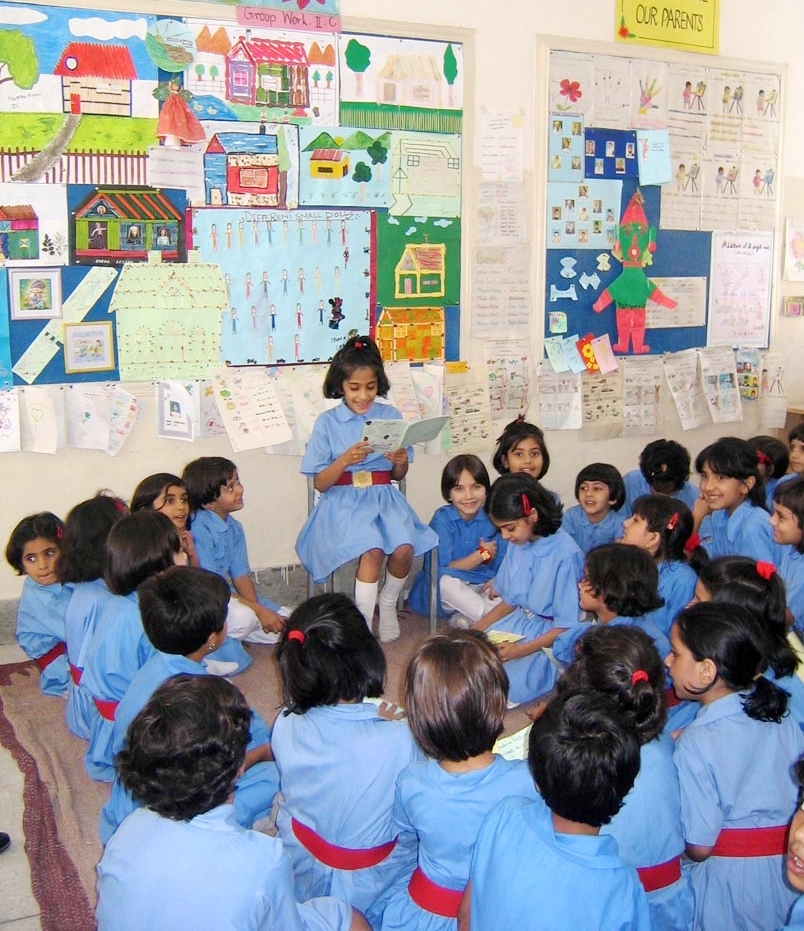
Reading 02